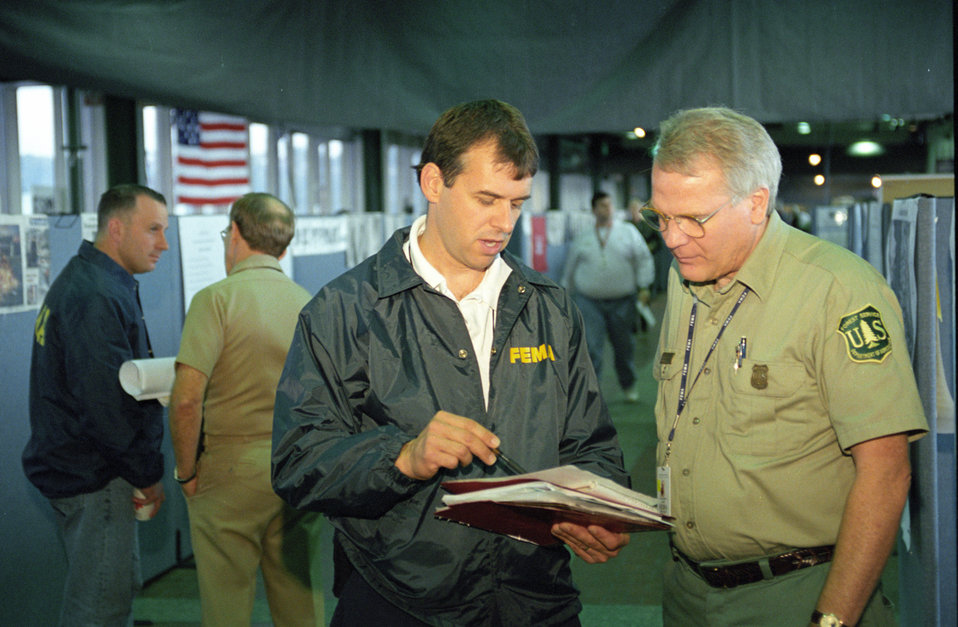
September 11, 2001 terrorists attacked the World Trade Center in New York City, NY, the Pentagon in Arlington, VA and a field in rural Pennsylvania. After the attacks the U.S. Department of Agriculture (USDA) Forest Service (FS) Incident Management Teams restored communications and provided initial incident command of the World Trade Center and Pentagon Crash sites on September 26, 2001.